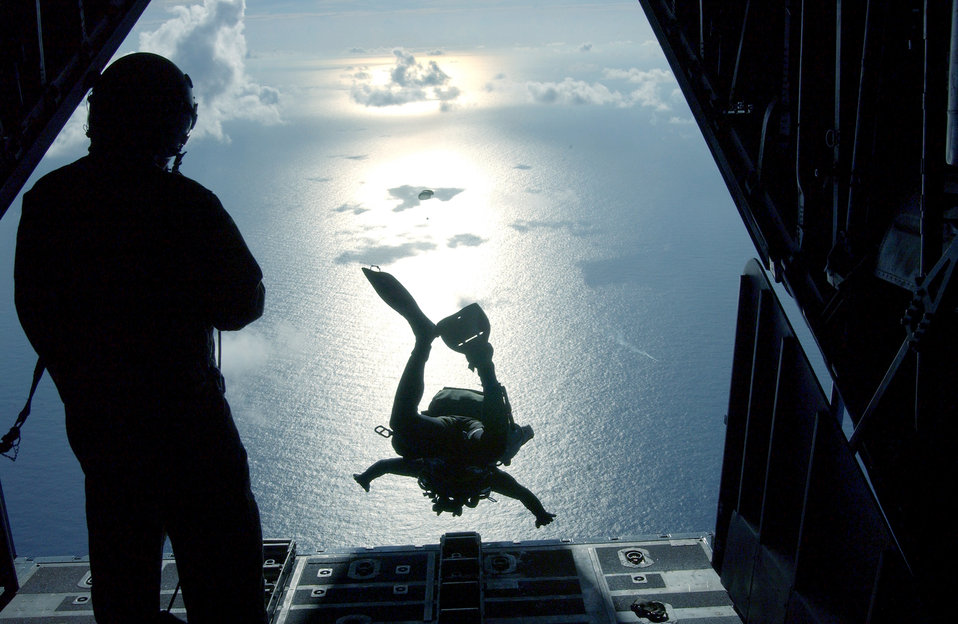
To the rescue

OVER THE ATLANTIC OCEAN (AFPN) -- One of two pararescuemen from 38th Rescue Squadron at Moody Air Force Base, Ga., follows an inflatable boat out the back of an HC-130 during a rescue mission 350 miles northeast of the Caribbean island of St. Maarten on July 23. They provided medical support to a Chinese fisherman who sustained a life-threatening chest injury the day before.